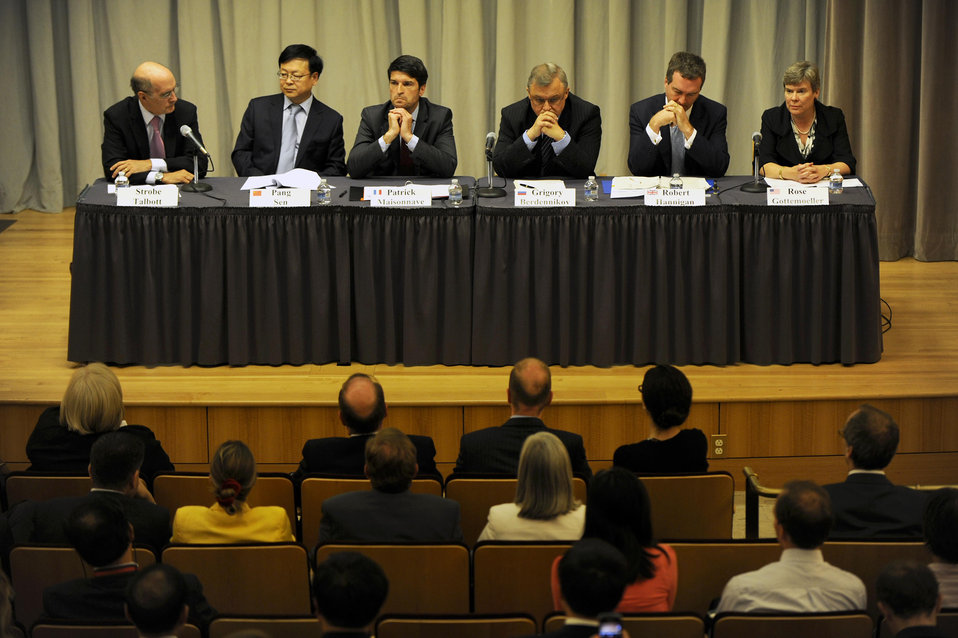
P5 Conference Public Event

The heads of each P5 delegation discuss the efforts of their nation, as well as the collective efforts of the P5, to fulfill their Nuclear Non-Proliferation Treaty Article VI and other commitments, during a public event at the U.S. Department of State in Washington, D.C., June 27, 2012. From left to right: Strobe Talbott, President, Brookings Institution (moderator); Pang Sen, Director-General, Arms Control and Disarmament Department, Chinese Ministry of Foreign Affairs; Patrick Maisonnave, Director for Strategic, Security and Disarmament Affairs, French Ministry of Foreign Affairs; Ambassador Grigory Berdennikov, Ambassador-at-Large, Russian Ministry of Foreign Affairs; Robert Hannigan, Director General, Defence and Intelligence, British Foreign & Commonwealth Office; Rose Gottemoeller, Acting Under Secretary of State for Arms Control and International Security, U.S. Department of State.